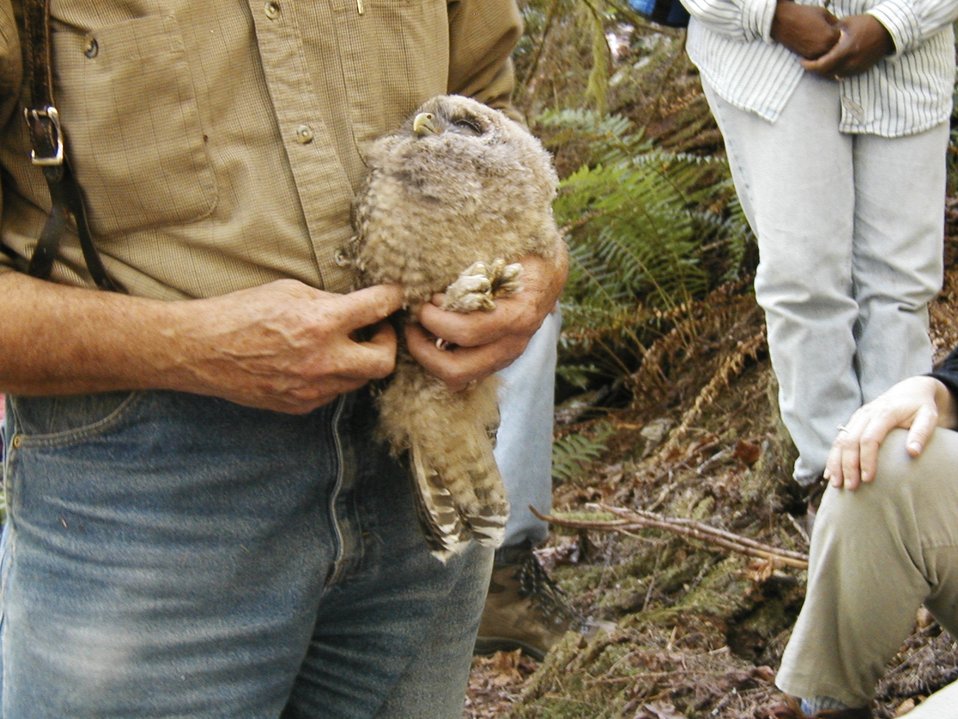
Spotted Owl Banding